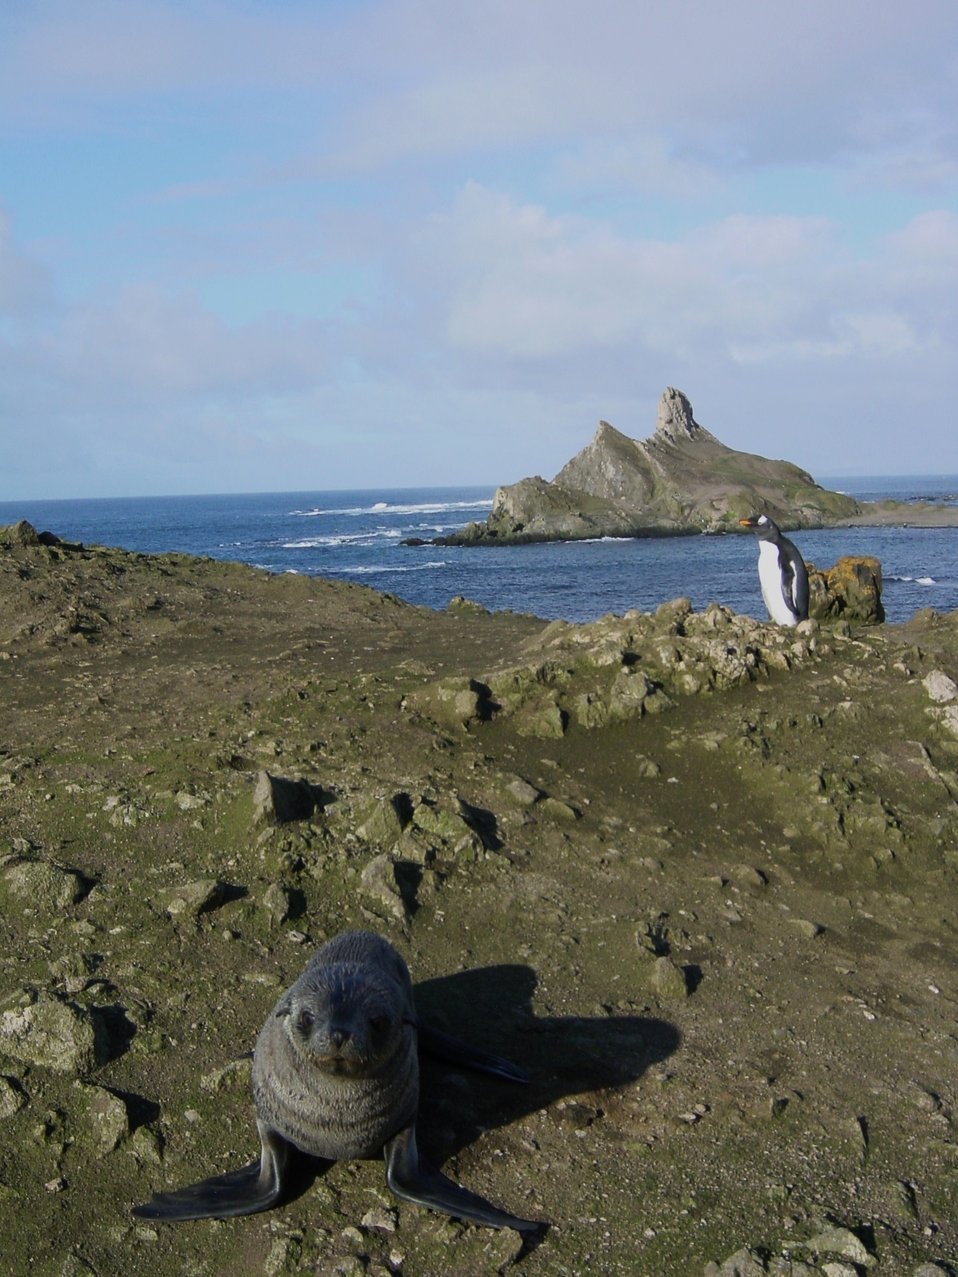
An Antarctic fur seal pup and a Gentoo penguin